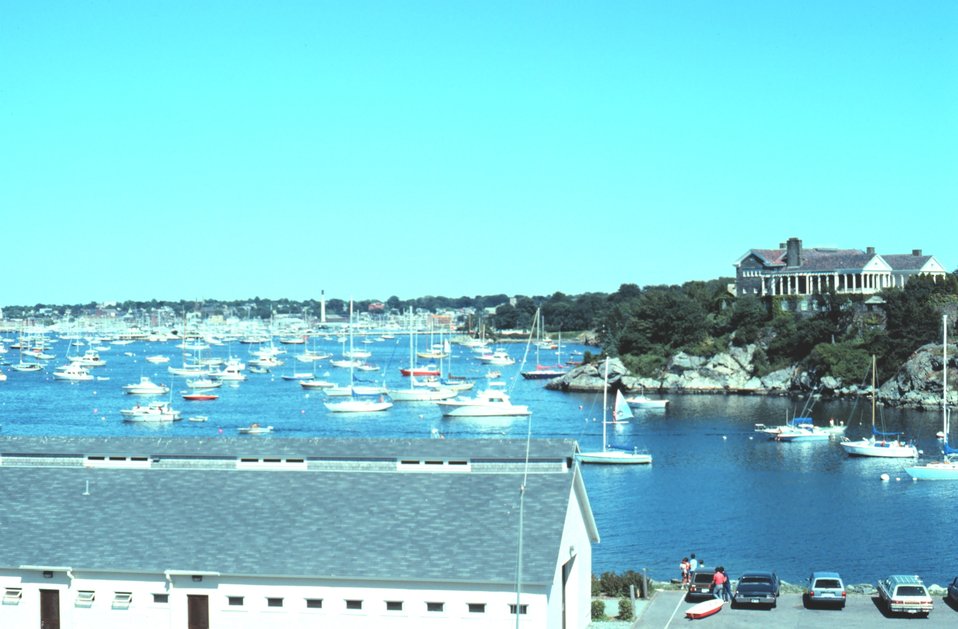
Newport Harbor looking to Beacon Rock